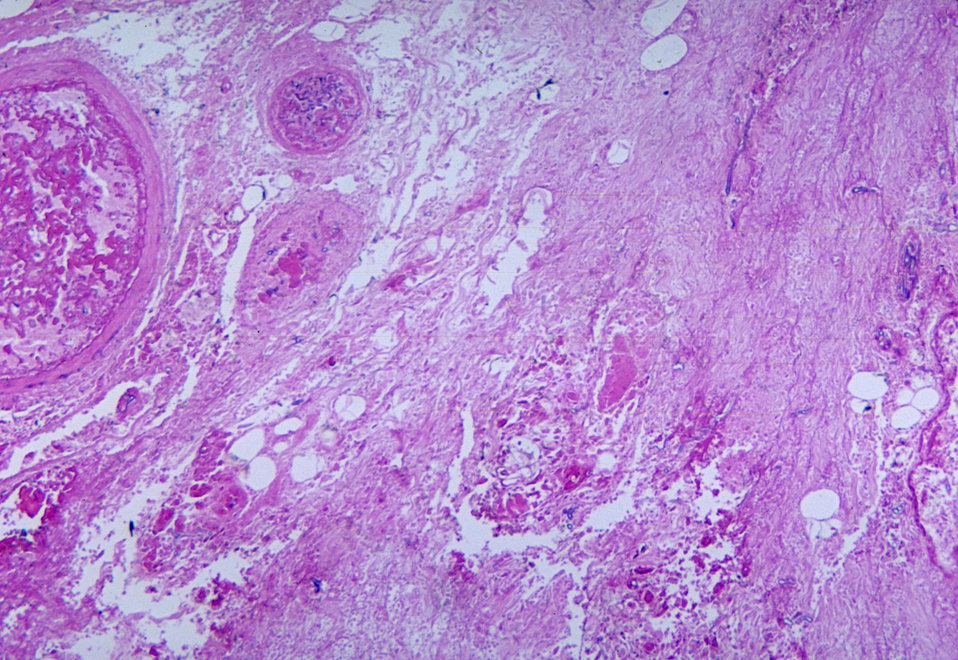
This micrograph depicts the histopathologic changes associated with zygomycosis of the stomach.